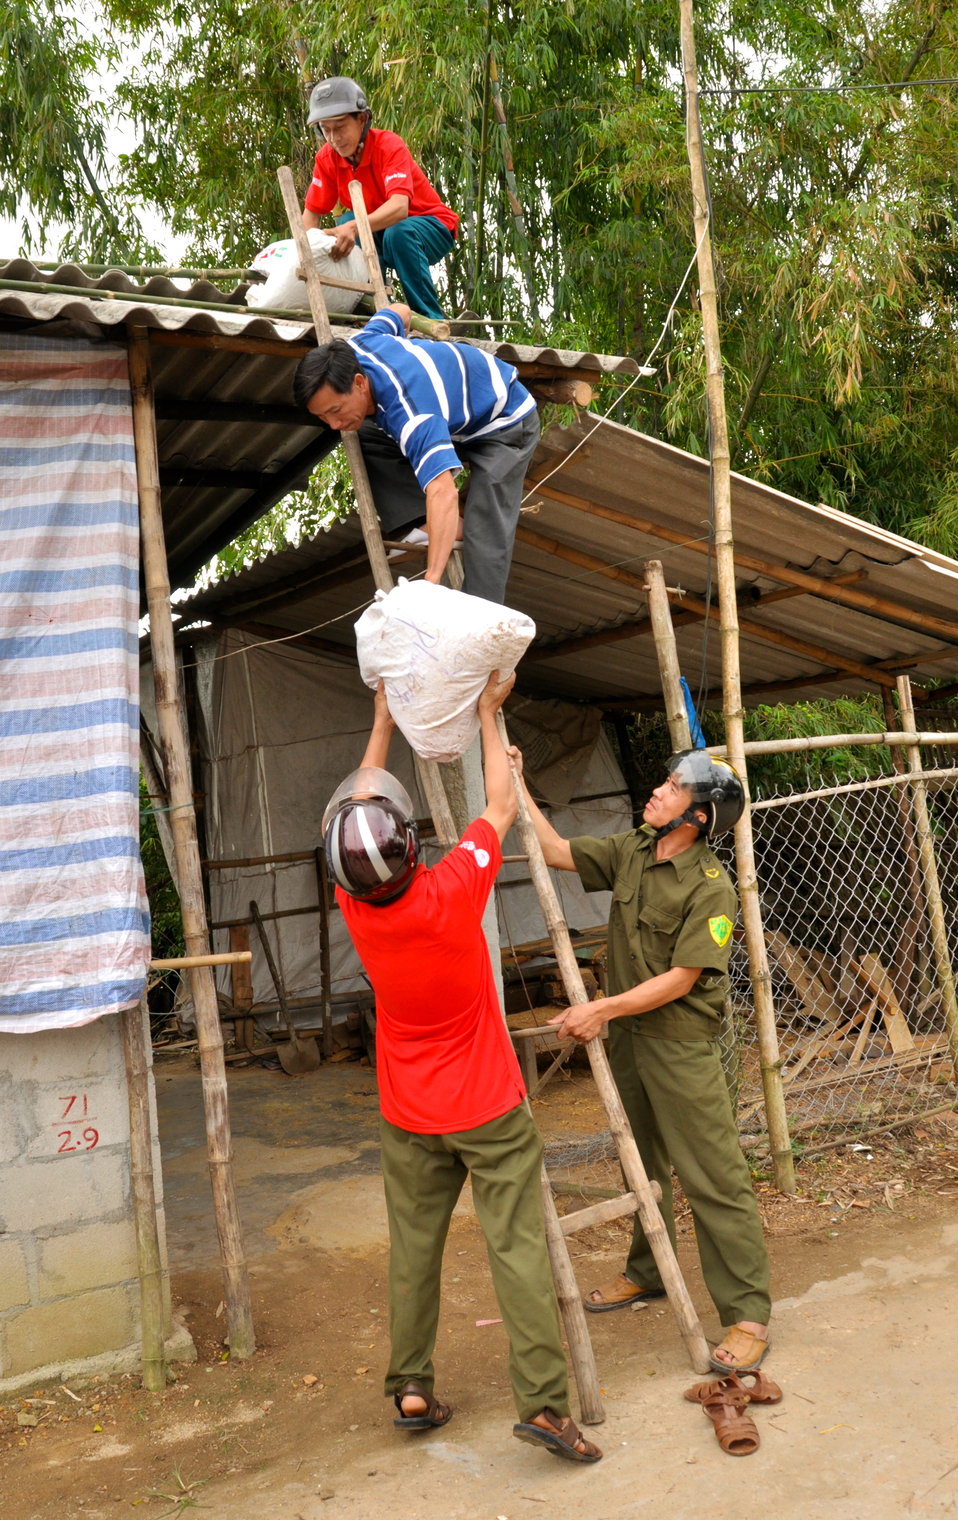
USAID and Save the Children support community evacuation drill and emergency preparedness in central Vietnam

Loc An Commune, Phu Loc District, Thua Thien Hue Province
December 4, 2012, Photo: Richard Nyberg, @USAIDVietnam